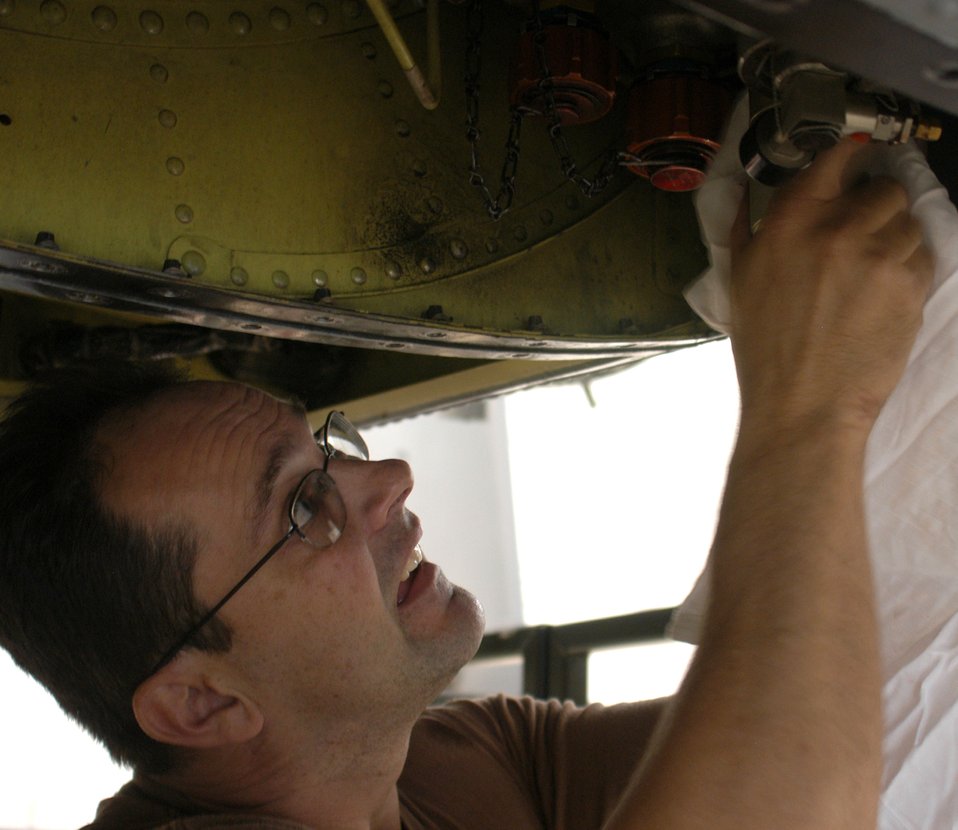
Reconstituting the A-10

Tech. Sgt. David Firth changes the left hydraulic pressure return filters on an A-10 Thunderbolt II Nov. 5 during a phase inspection following the return of the aircraft from a four-month deployment to Afghanistan. Sergeant Firth, an Air Force reservist, is a hydraulics specialist with the 442nd Maintenance Squadron at Whiteman Air Force Base, Mo.